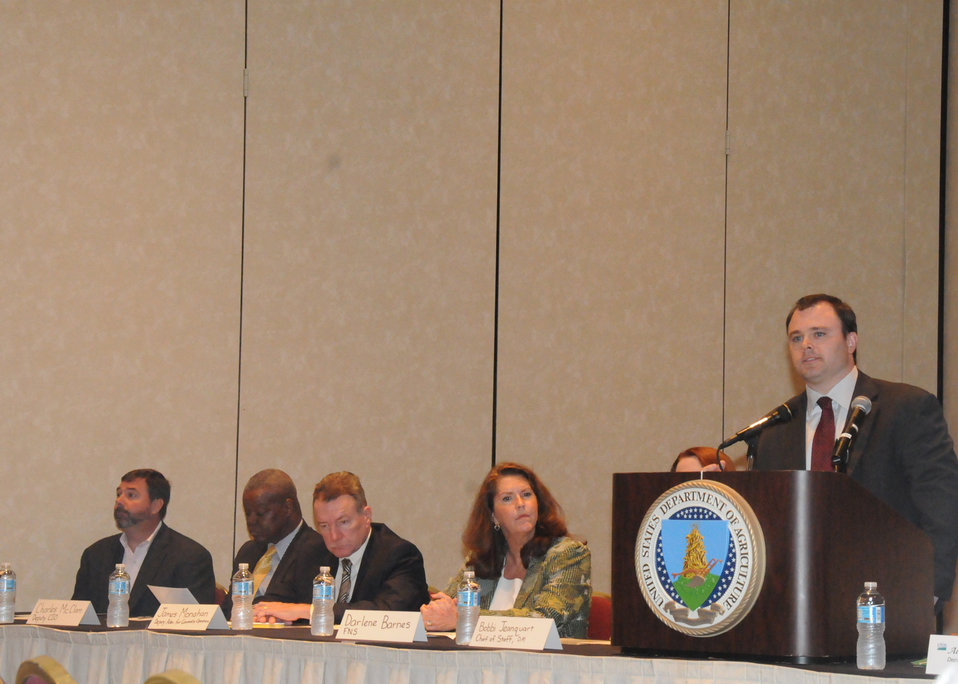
U. S. Department of Agriculture Farm Service Agency Administrator Jonathan Coppess makes opening remarks to employees at the Cultural Transformation listening session in Kansas City, MO, on Wednesday, April 14, 2010. (Seated L to R) USDA officials, Chief Information Officer Chris Smith, Deputy Chief Information Officer Charles McClam, Deputy Administrator for Commodity Programs James Monahan, and Food Nutrition Service representative Darlene Barnes. USDA photo 10di1308-30.